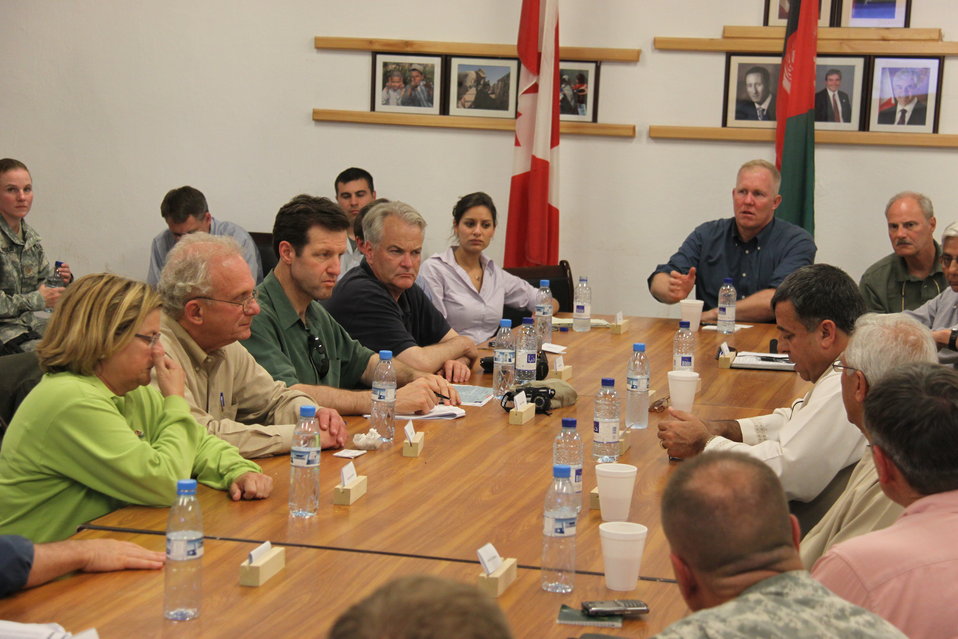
Meeting with Local Leaders in Kandahar